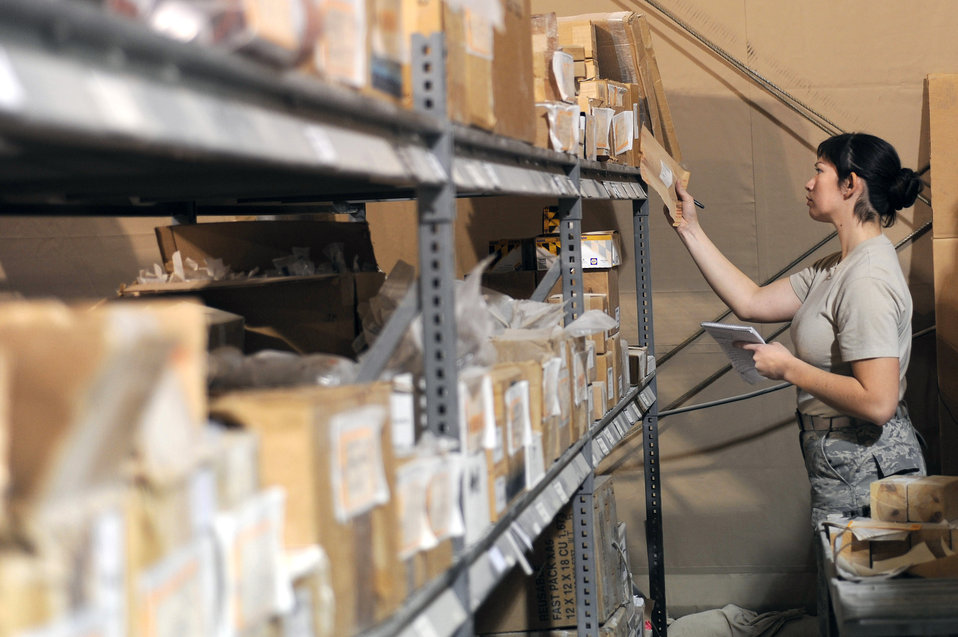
KAF APS

Senior Airman Tabitha Rasmussen inspects an aircraft part packing number Dec. 16, 2010, at Kandahar Airfield, Afghanistan. The 451st Expeditionary Logistics Readiness Squadron Aircraft Parts Store supports 11 aircraft maintenance units with an inventory of more than 250,000 parts valued at $19 million. Airman Rasmussen is a material management journeyman assigned to the 451st ELRS.